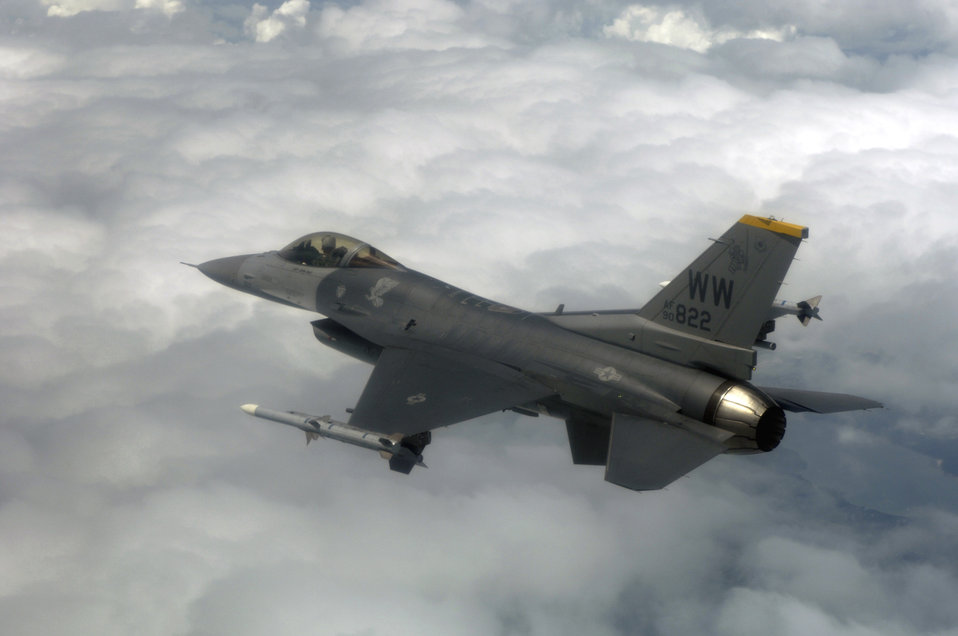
Commando Sling

OVER SINGAPORE -- An F-16 Fighting Falcon from the 14th Fighter Squadron at Misawa Air Base, Japan, finishes a mission Nov. 8 during Exercise Commando Sling. The annual exercise began in 1990 to provide valuable combined air combat training for U.S. and Singapore Air Force fighter units. The exercise allows units to sharpen air combat skills, improve procedures for sustained operations at a non-U.S. base, and promote closer relations between the two air forces and nations.